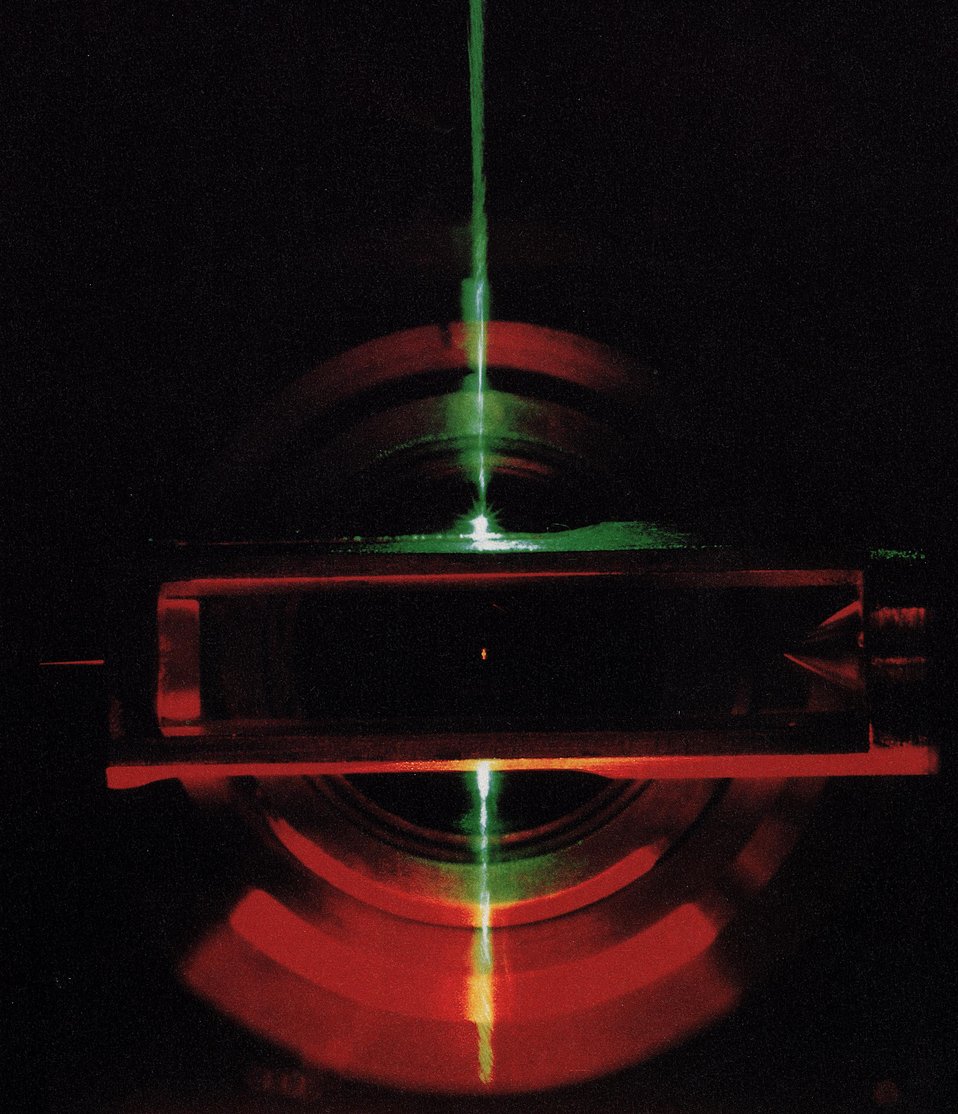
Application of flow cytometry to DNA sequencing. The small yellow spot in the center of this multiple-exposure photograph shows the fluorescence from approximately 1000 molecules of the laser dye -- rhodamine 6G. The apparatus shown is a modified flow cyclometer with the green argon laser beam traversing from left to right.